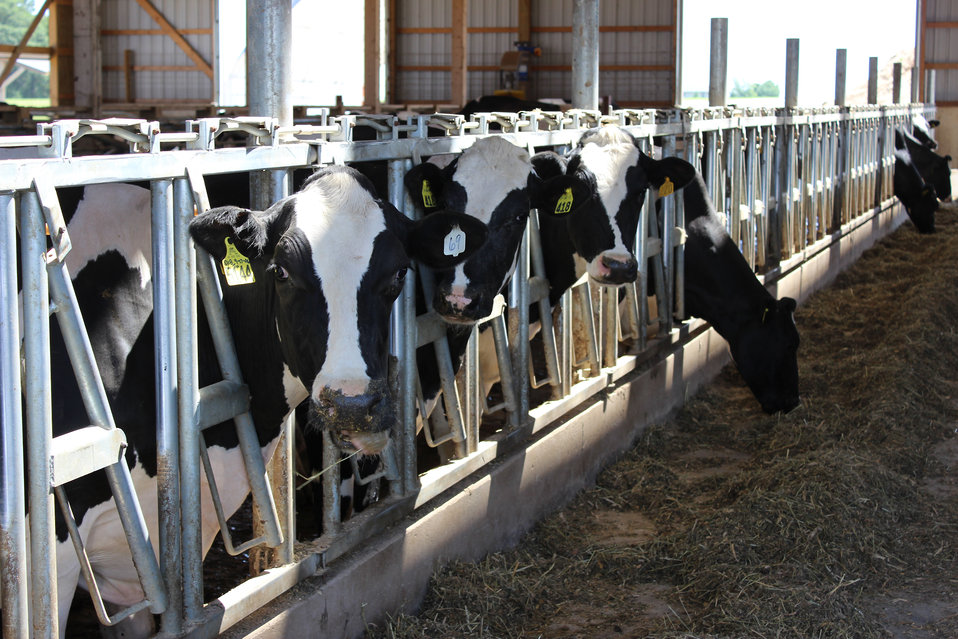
Ranch 3

An underground gravity waste flow system helps manage manure on James “Jim” Johnson’s Boone County, IL ranch. The U.S. Department of Agriculture's (USDA) Natural Resource Conservation Service (NRCS) assisted Johnson with the development of a comprehensive nutrient management plan.USDA photo.